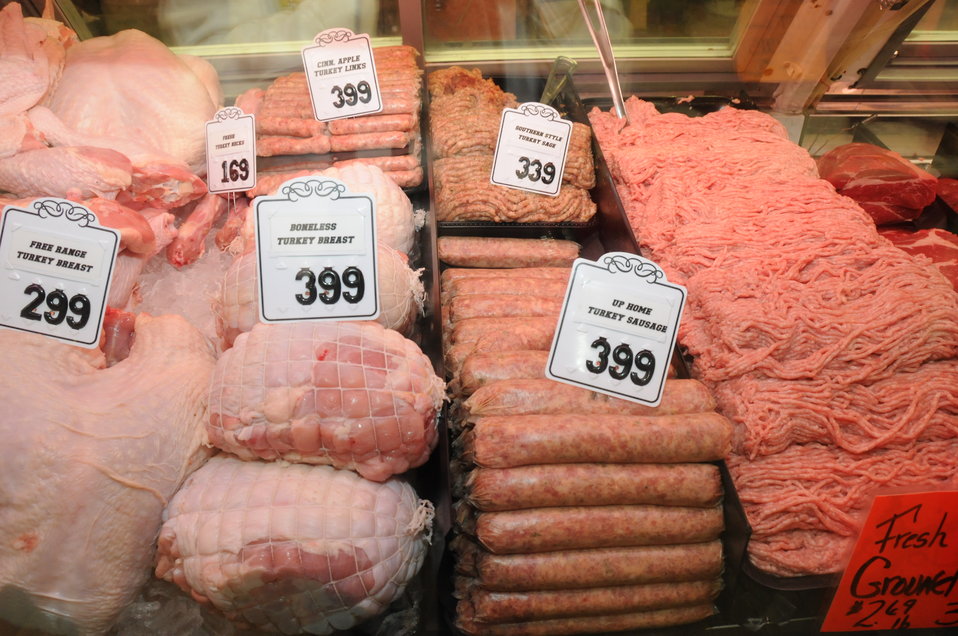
The Reading Terminal Market offers produce fresh from the field to the people of Philadelphia, PA on April 3, 2009. There are Amish specialties, fruits, vegetables, meats, seafood, and poultry. Reading Terminal Market opened for business in 1892 with approximately 78,000 square feet and almost 800 spaces for vendors. The Market was revitalized in the 1990’s and today is still the gastronomic bazaar that its original planners had envisioned. Many of the historic Market stands survived the reconstruction and are once again filled with local produce, fresh eggs, milk, meats, poultry, seafood, handmade crafts, jewelry, and clothing. The Market is home to more than 80 merchants, two of whom are descendants of the original stand holders from a century before.